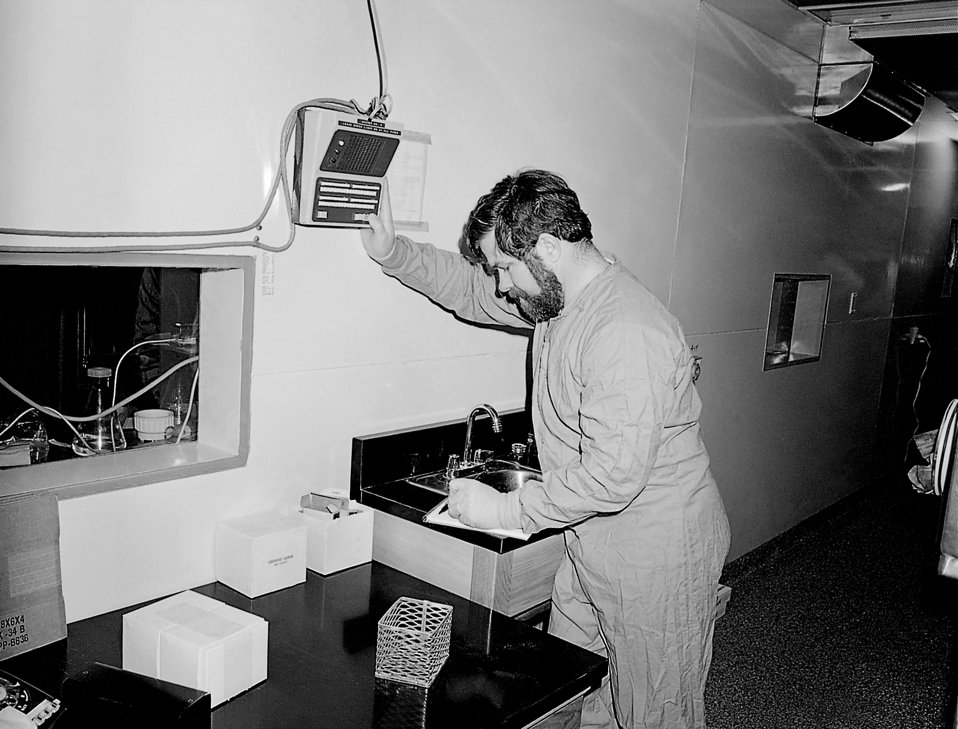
From outside the laboratory, this 1978 photograph depicted lab technician, M. Kiley, communicating to scientists inside a CDC Maximum Containment Laboratory using an intercom system, and is therefore, not required to don a protective BSL body suit.